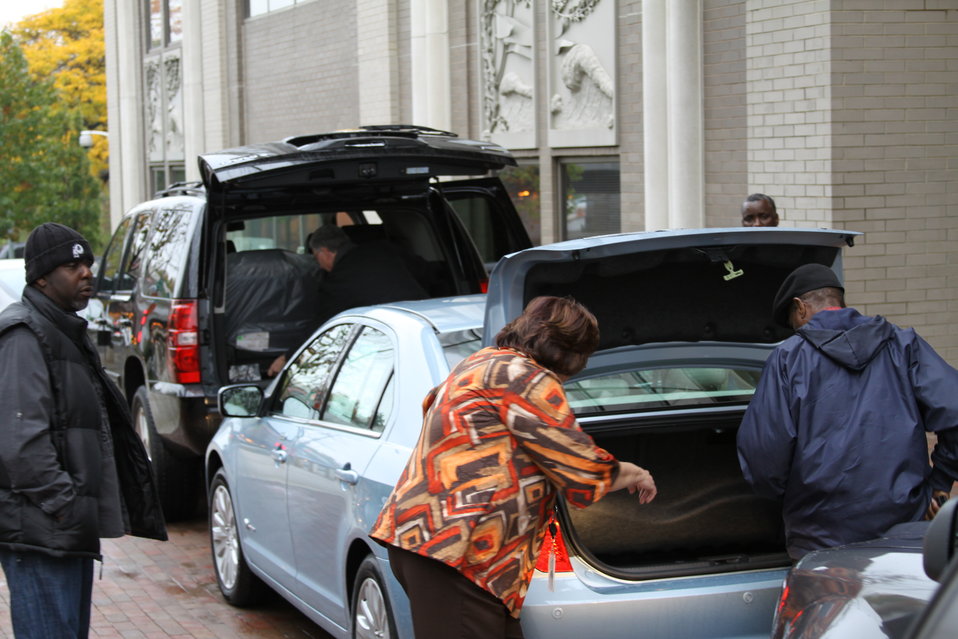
FCC Official Vehicle Tour